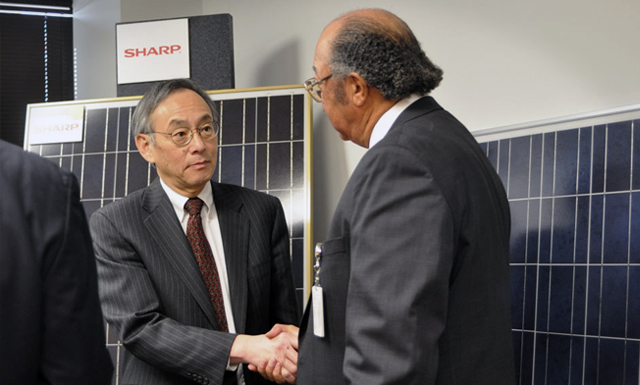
Hero CHU Sharp

Secretary Steven Chu with Sharp executive T.C. Jones, standing in front of some of Sharp’s solar panel. January 27, 2011.